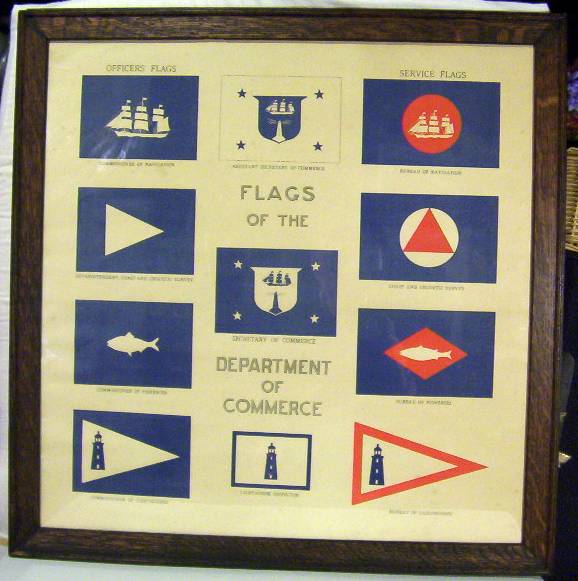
Dept of Commerce Flags